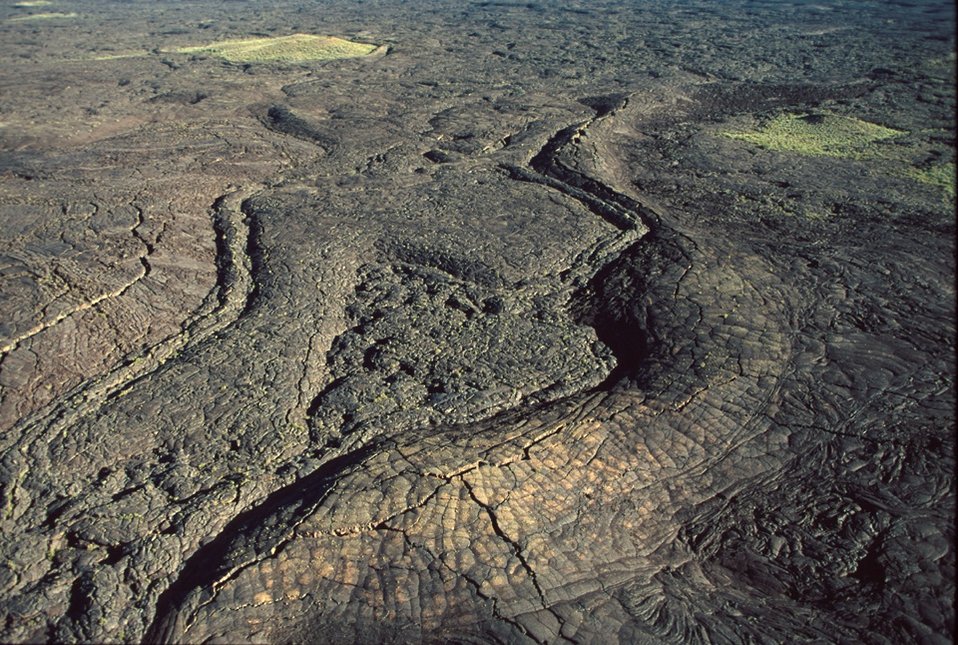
Craters of the Moon National Monument Shoshone Field Office USRD Upper Snake River District